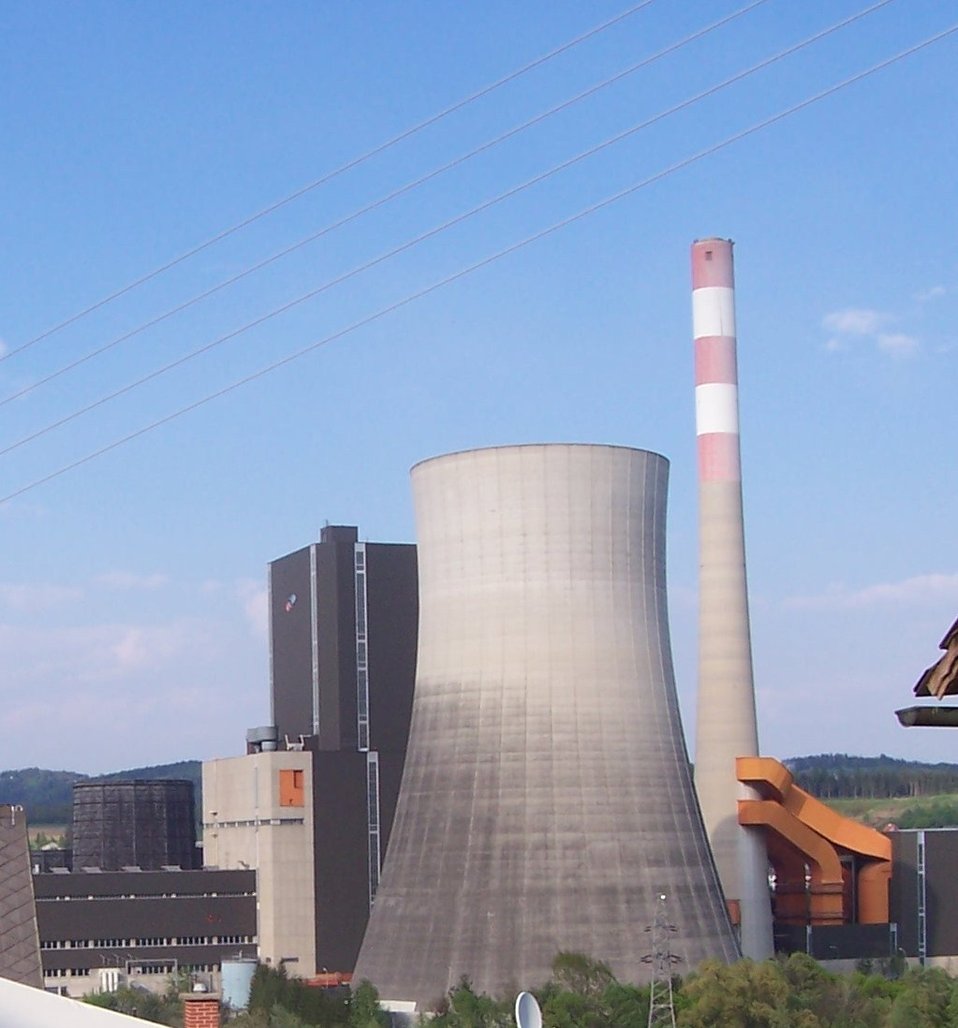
Deutsch: Dampfkraftwerk Voitsberg